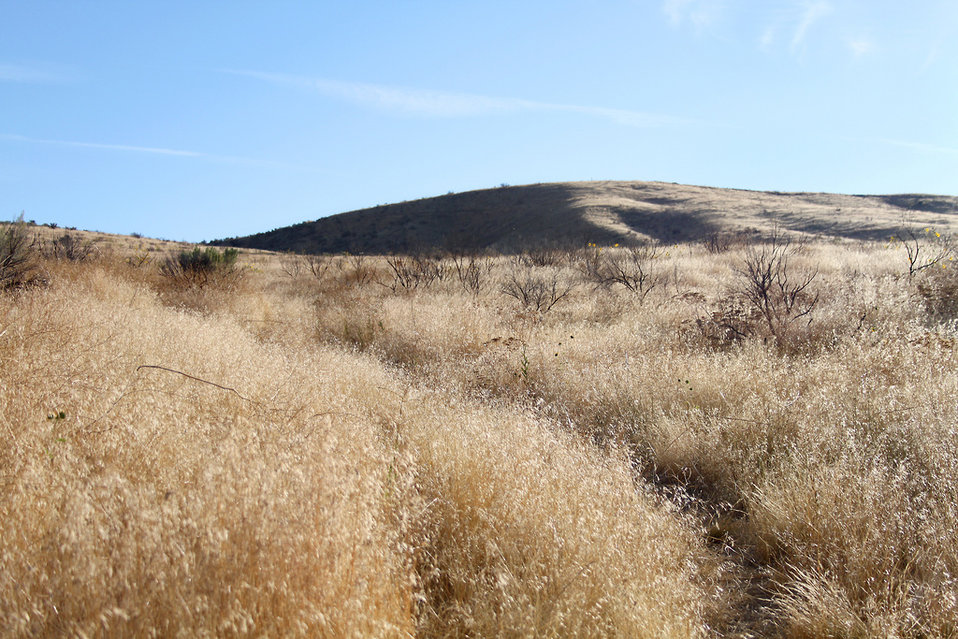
Invasive cheatgrass

Cheatgrass has invaded sagebrush steppe rangeland, chokling out desirable native grasses and forbs and causing a fire hazard.